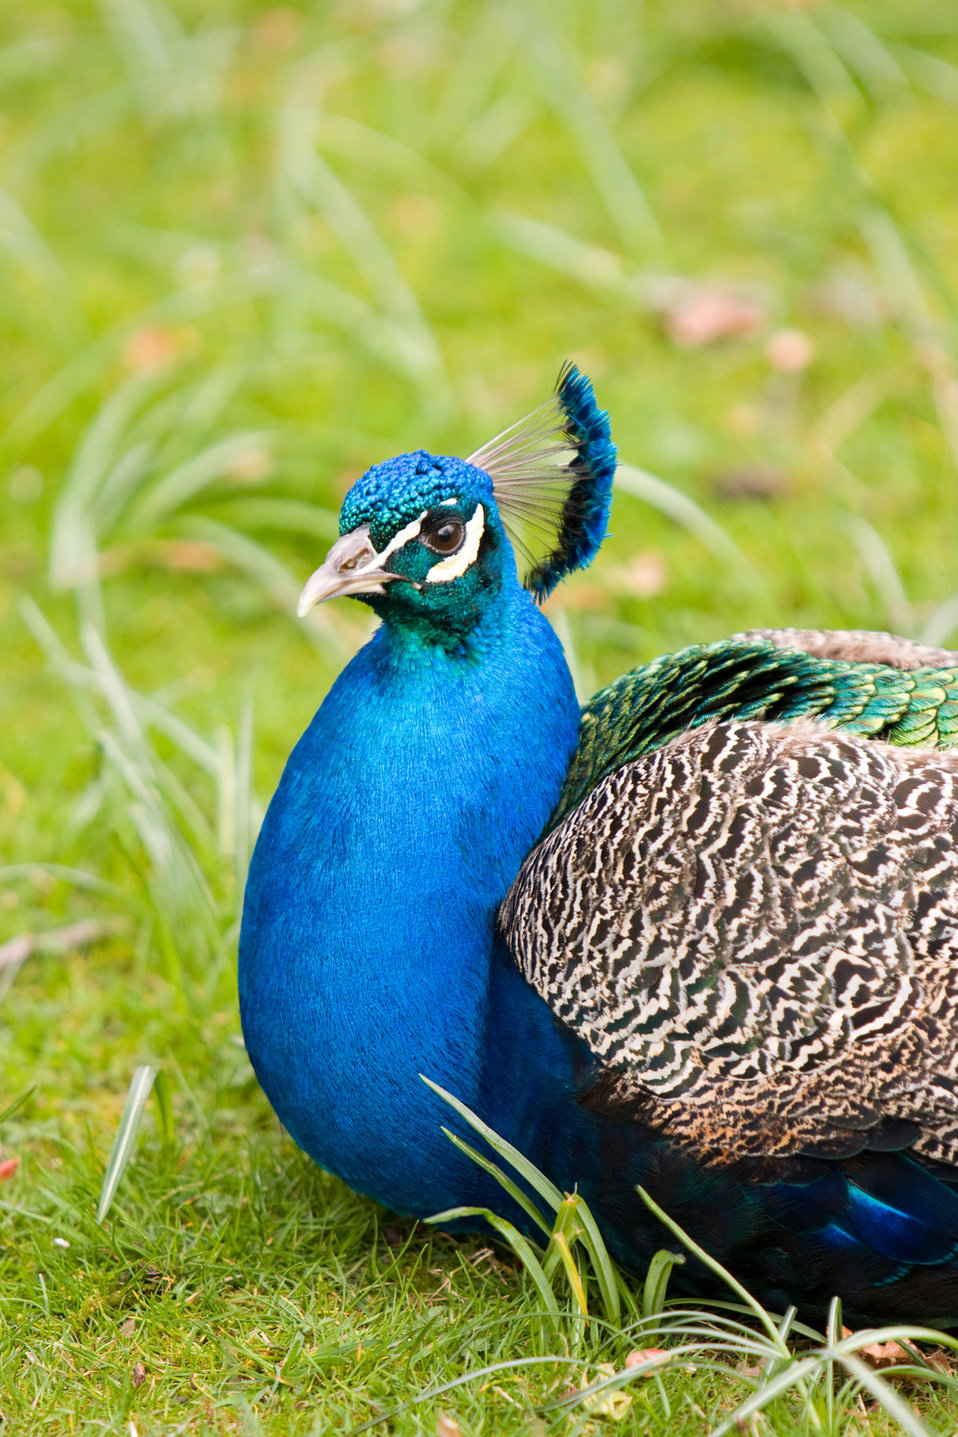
Peafowl, peacock bird

Beautiful close-up photo of a blue peafowl or peacock bird laying down.